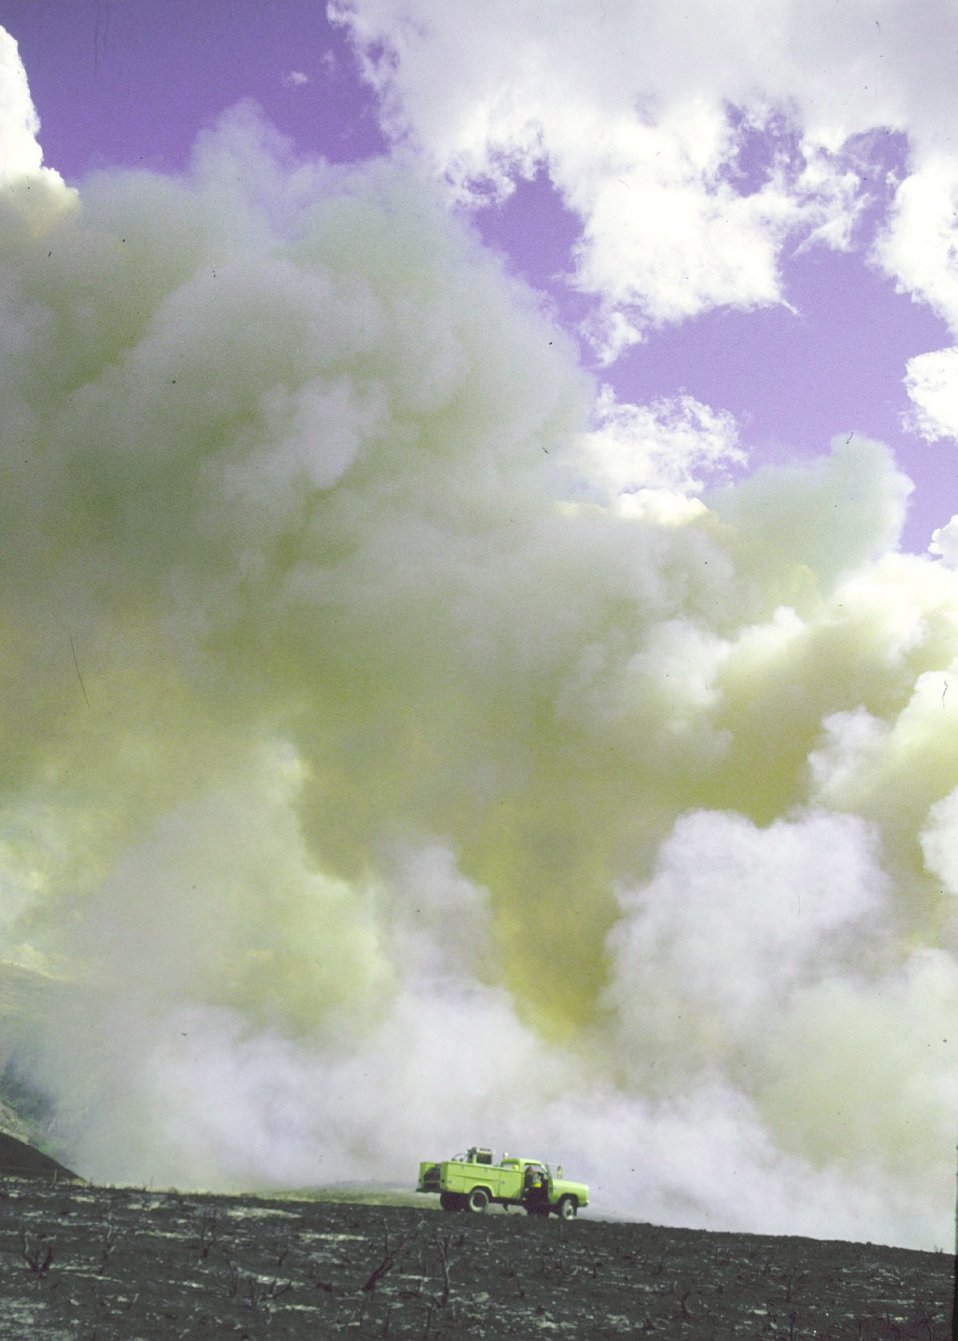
Prescribed burn on public lands in Wyoming.